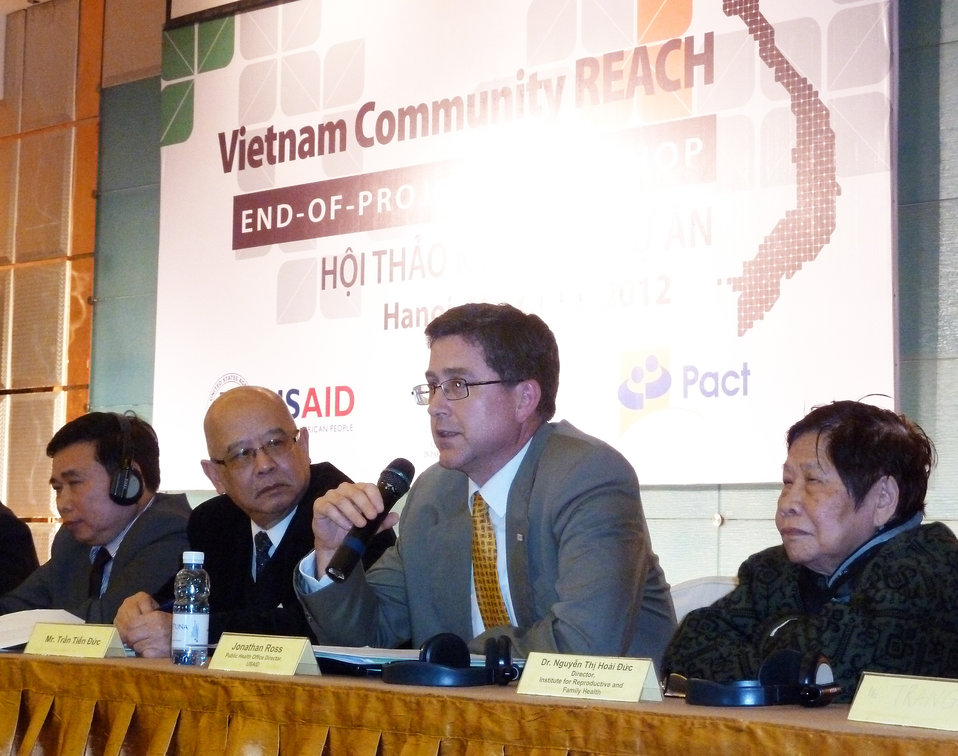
USAID Office of Heath Director Jonathan Ross joins a panel discussion on civil society response to HIV at the Community REACH project workshop

Community REACH project close-out with USAID and implementing partner, Pact